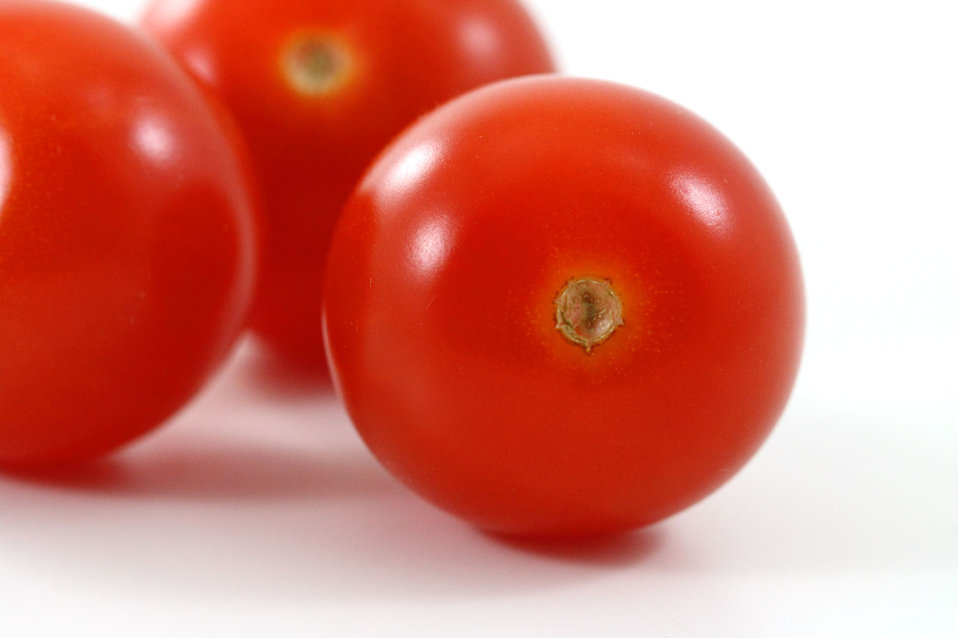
Tomatoes

Three cherry tomatoes.